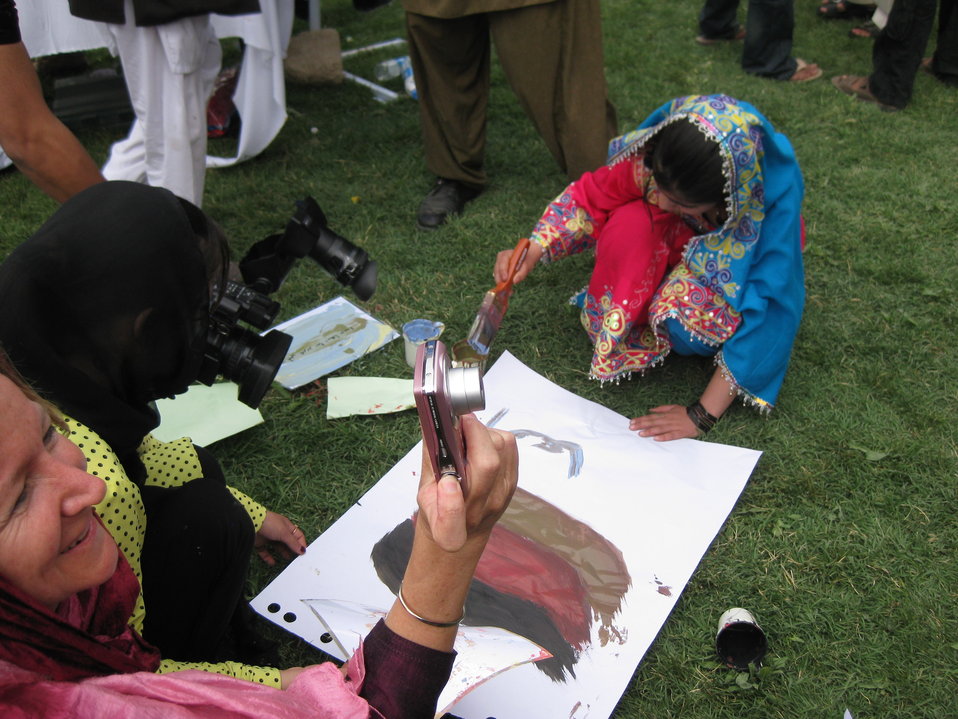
Afghan Youth Voices 084